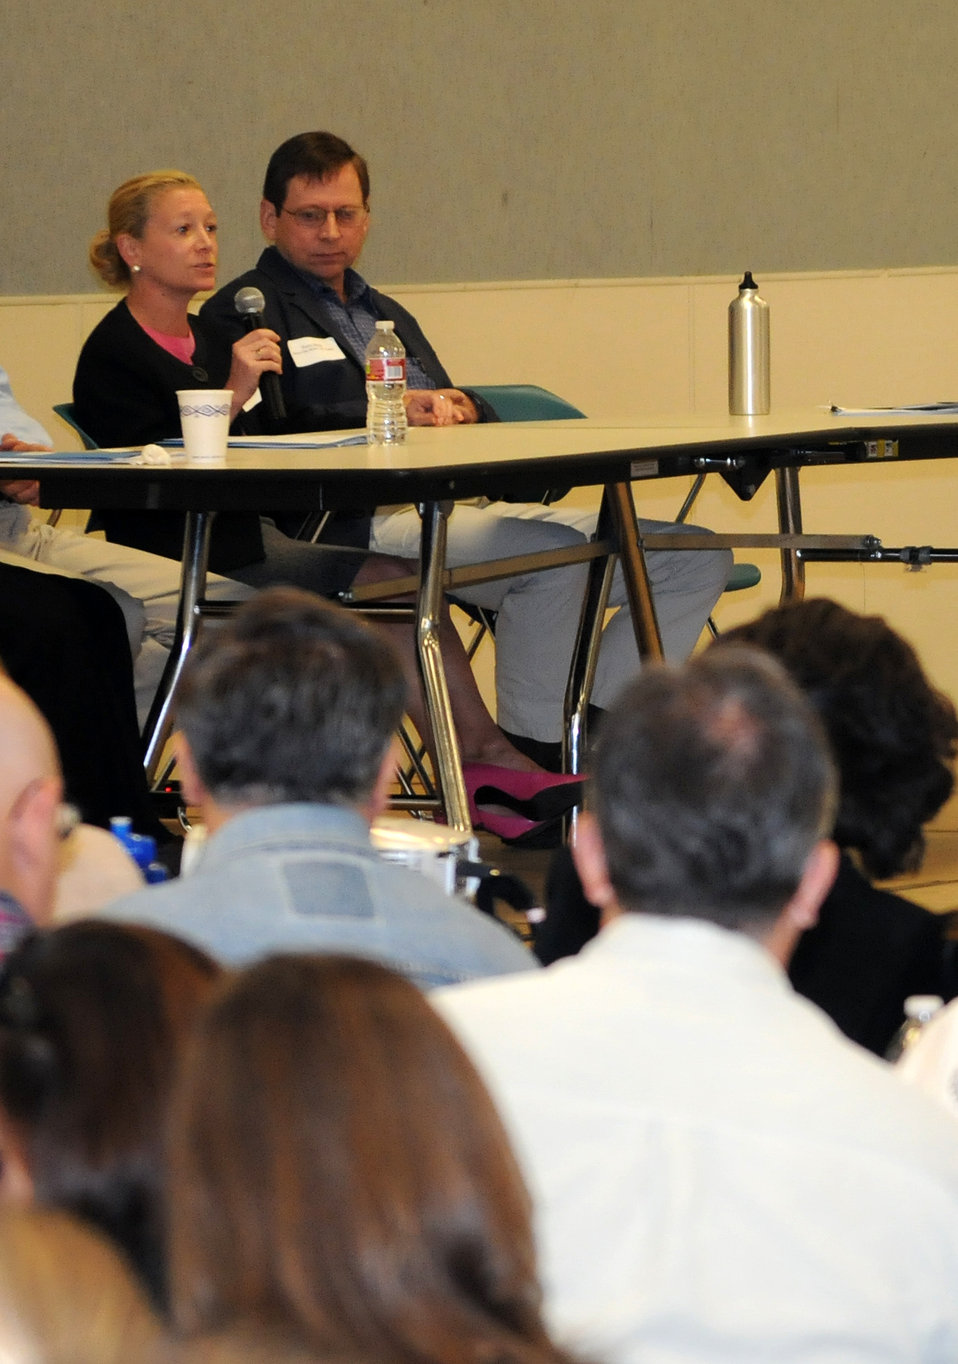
VACAVILLE, Calif. (Nov. 16, 2010) – Kate Dadey (left), a regulatory branch manager with the U.S. Army Corps of Engineers Sacramento District speaks about the integration of species conservation into the Corps permit program during the 8th Annual Habitat Conservation Planning Workshop here Nov. 16. “One of the big challenges of the regional habitat conservation plan is that we’ve never done this before. We are actually at the forefront of something that’s really new and exciting”, said Dadey.